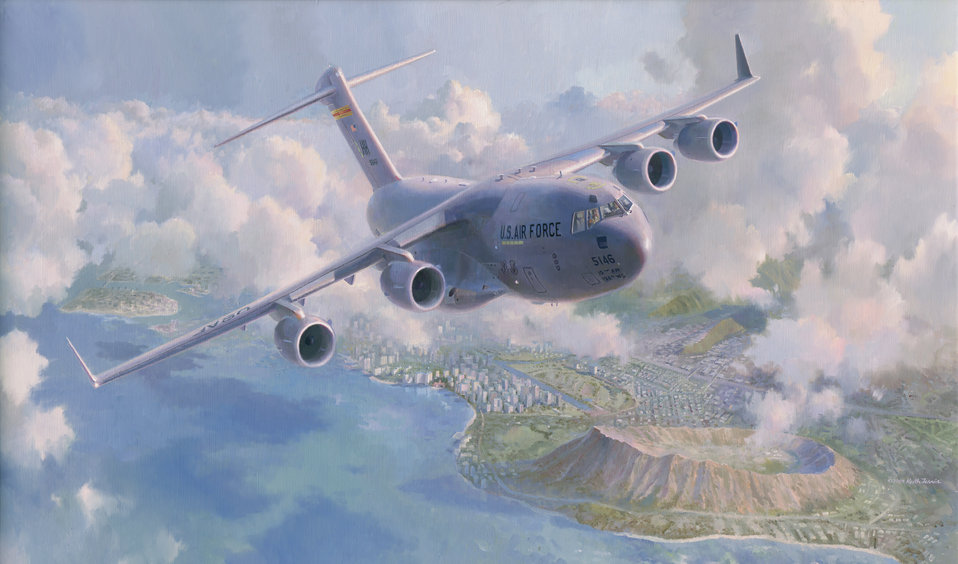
Bolling officials to display 200 new Air Force paintings